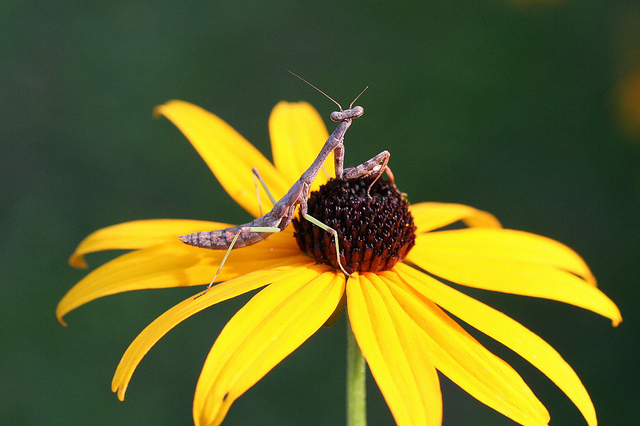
snoozin' on a black-eyed susan